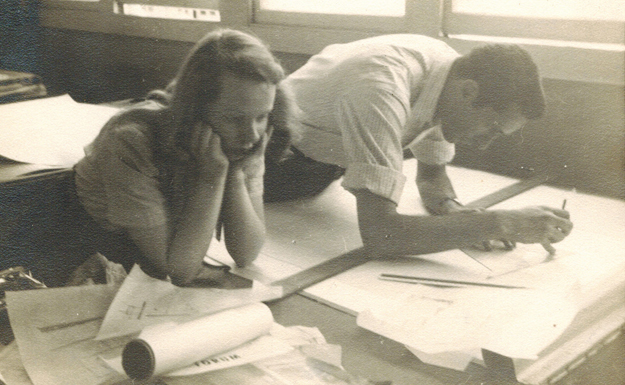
AOC Trailblazer: Georgia Shaw

Georgia Shaw was the first woman hired by the AOC as a draftsman, leading to a fulfilling 29-year career with the agency. After Georgia passed, her daughter honored her mother’s legacy by including the AOC’s logo on the memorial plaque that marks her grave.